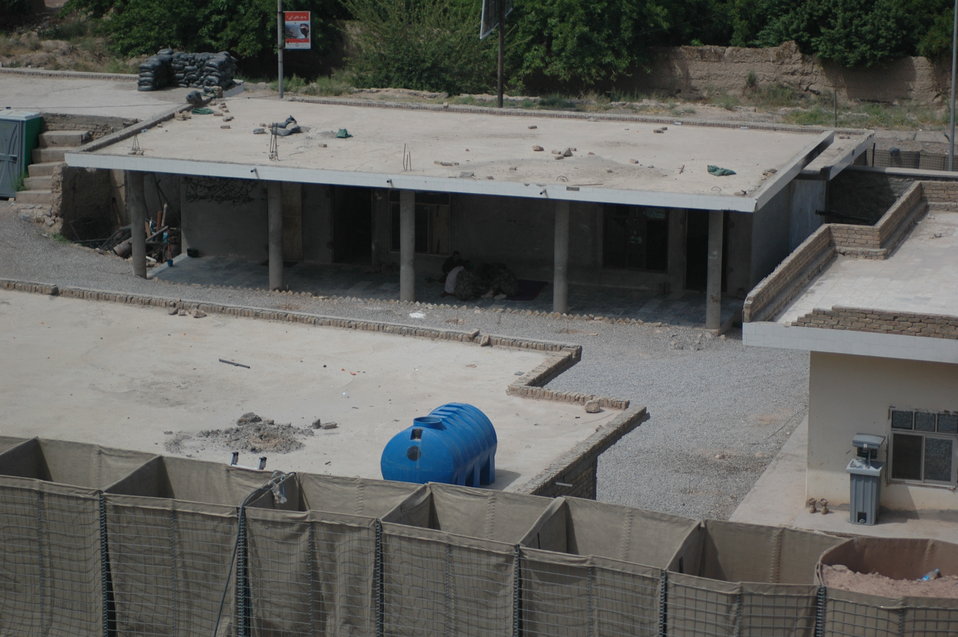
Dr Shah Visits Kandahar April 9, 2010